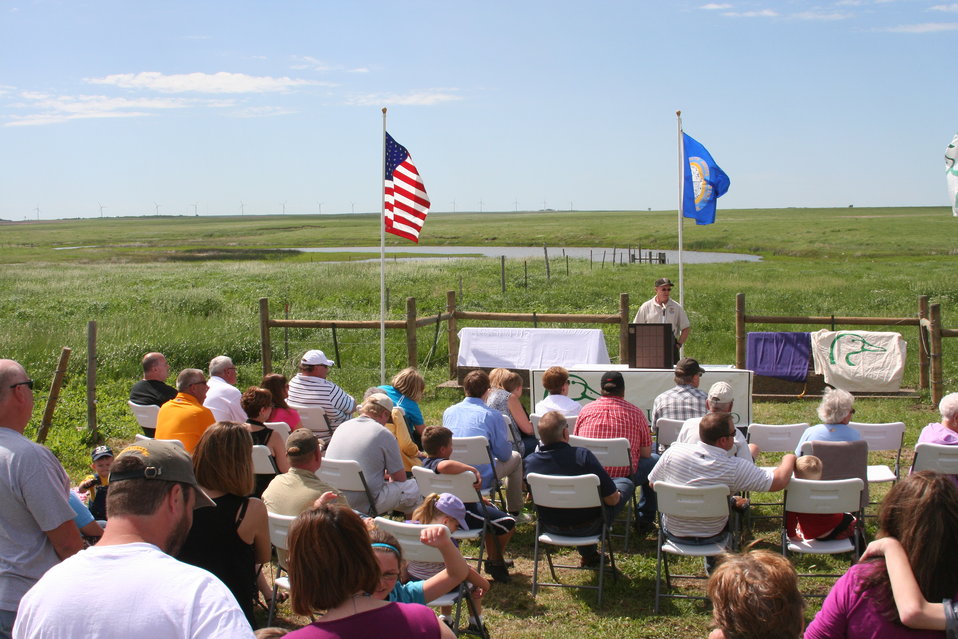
2013 Green Wing Dedication

Green Wing dedication at our Harter/Cowan WPA.